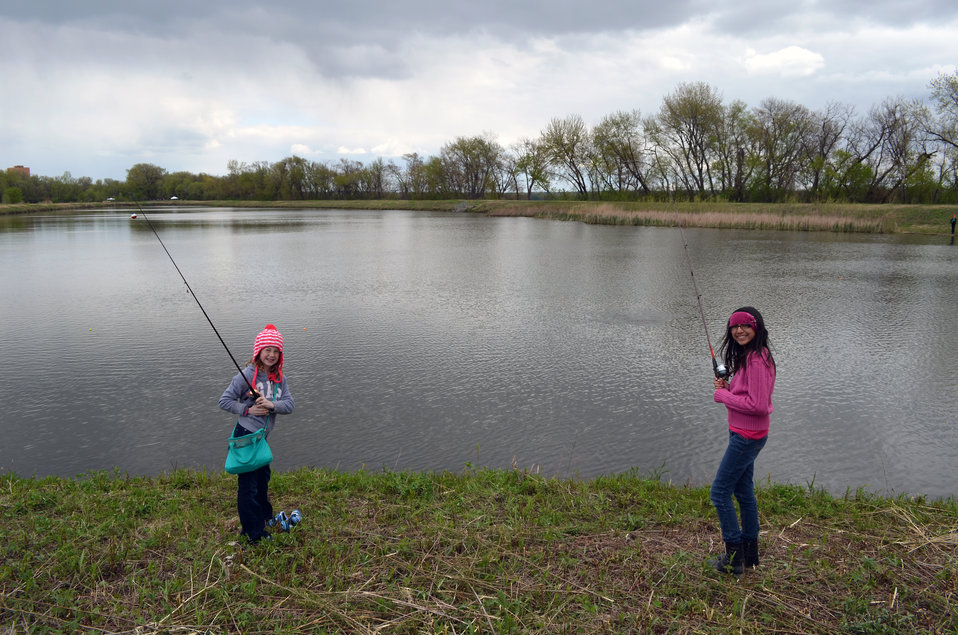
Girls pose while fishing